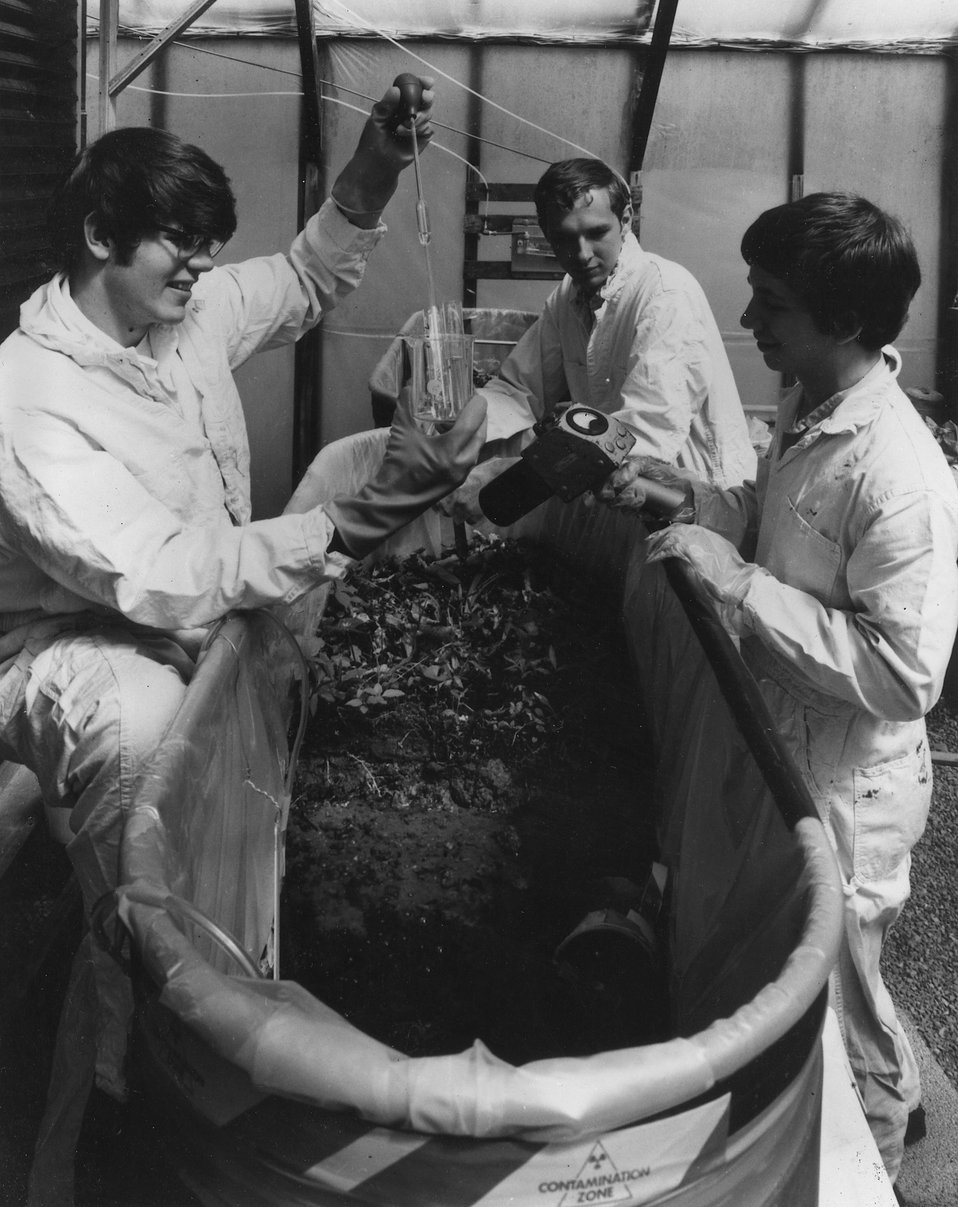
These Emory University undergraduate students in ecology are working on a research project on the movement of radio cadmium through a closed, macro-level, land-water ecosystem at the Ecological Sciences Division of the U.S. Atomic Energy Commission's Oak Ridge National Laboratory (Tenn.) under the Undergraduate Research Training Program. c. 1972